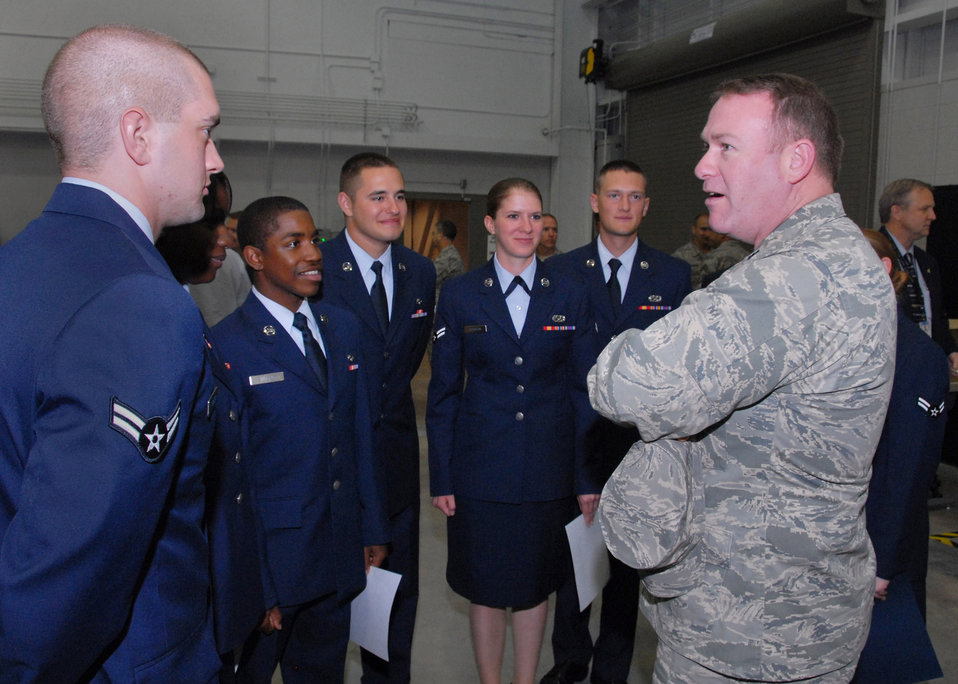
New concept in maintenance training comes to fruition

Lt. Col. Thomas Ventriglia speaks with students graduating from the F-22 Raptor Armament Systems course April 7 at Sheppard Air Force Base, Texas. The eight Airmen are the first Raptor maintenance class to graduate from the brand-new $21 million Raptor Maintenance Training Facility. Colonel Ventriglia is the 363rd Training Squadron commander.